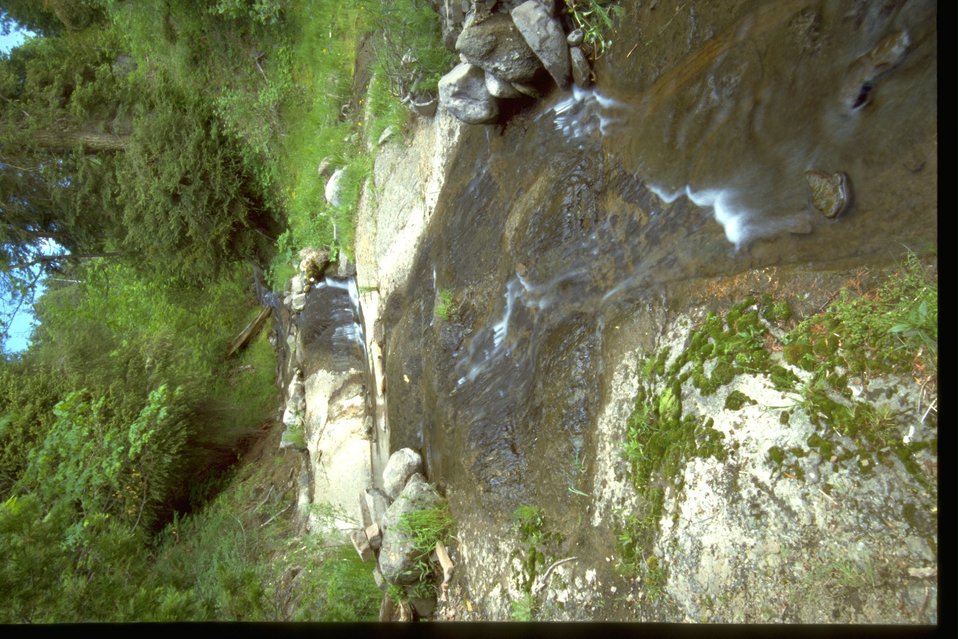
Riparian area along Scotch Creek drainage.